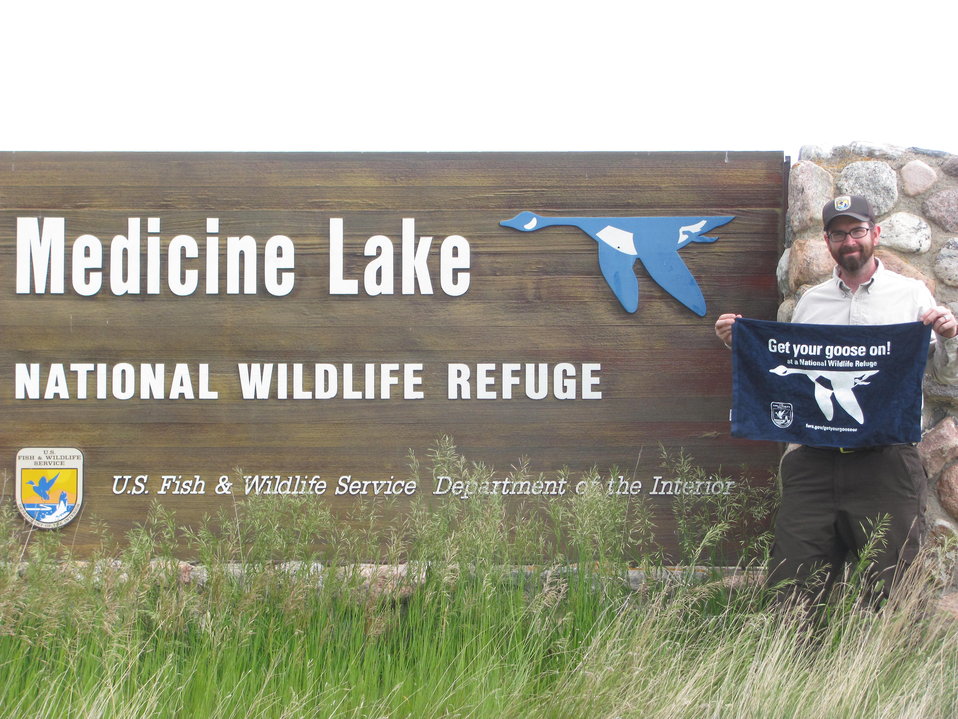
Get Your Goose On!

The Benton Lake National Wildlife Refuge traveling strike team Gets Their Goose On! at Medicine Lake.